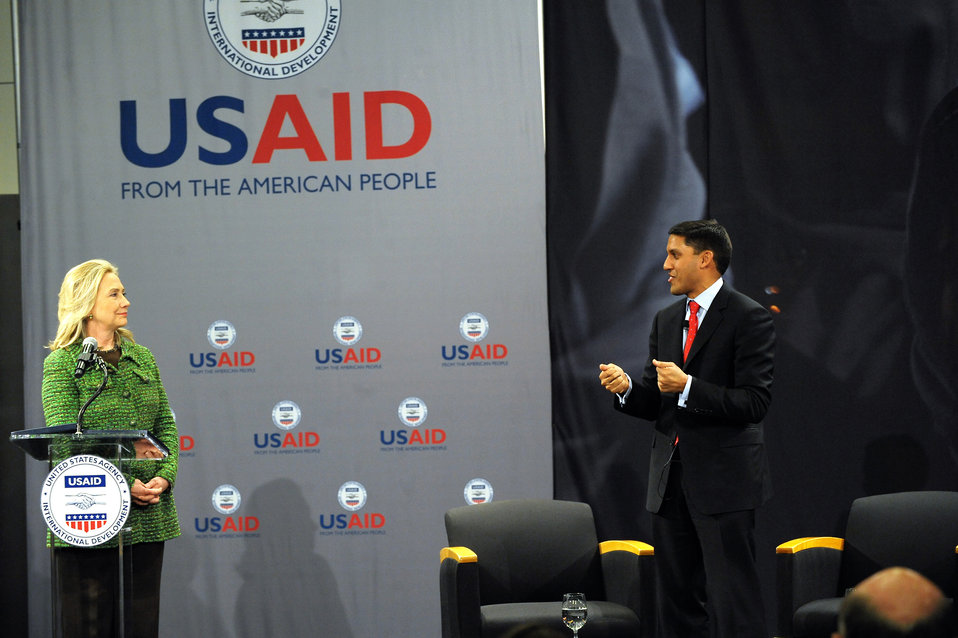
Secretary Clinton Participates in the USAID Town Hall Meeting

U.S. Secretary of State Hillary Rodham Clinton, with USAID Administrator Rajiv Shah, participates in the USAID town hall meeting at the Ronald Reagan Building in Washington, D.C., on February 15, 2012.